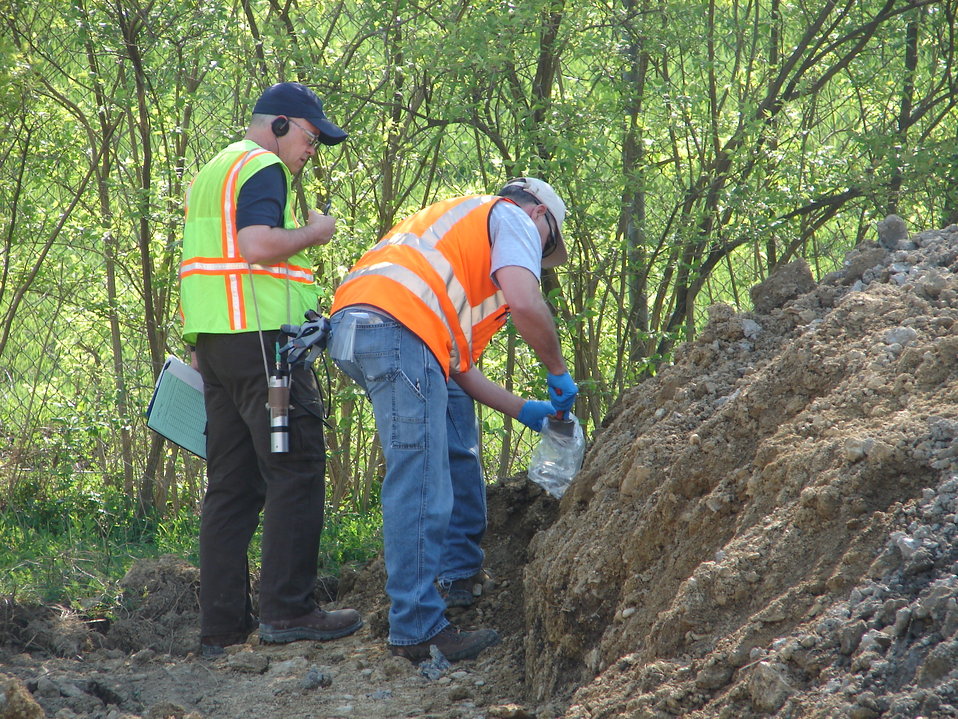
Recovery Act Project Brings End to Mound Site Cleanup Activities

The Recovery Act invested $17.9 million in the completion of EM’s legacy cleanup activities at the Mound Site in 2010.
Recovery Act workers disposed nearly 20,000 cubic meters of soil and demolition debris in the cleanup, which focused on the Operable Unit-1, a former mixed-waste landfill at the 306-acre site. The Recovery Act cleanup was the final remediation project at Mound.
The federal government is in the process of transferring ownership of the site to the Mound Development Corporation, a community reuse organization.